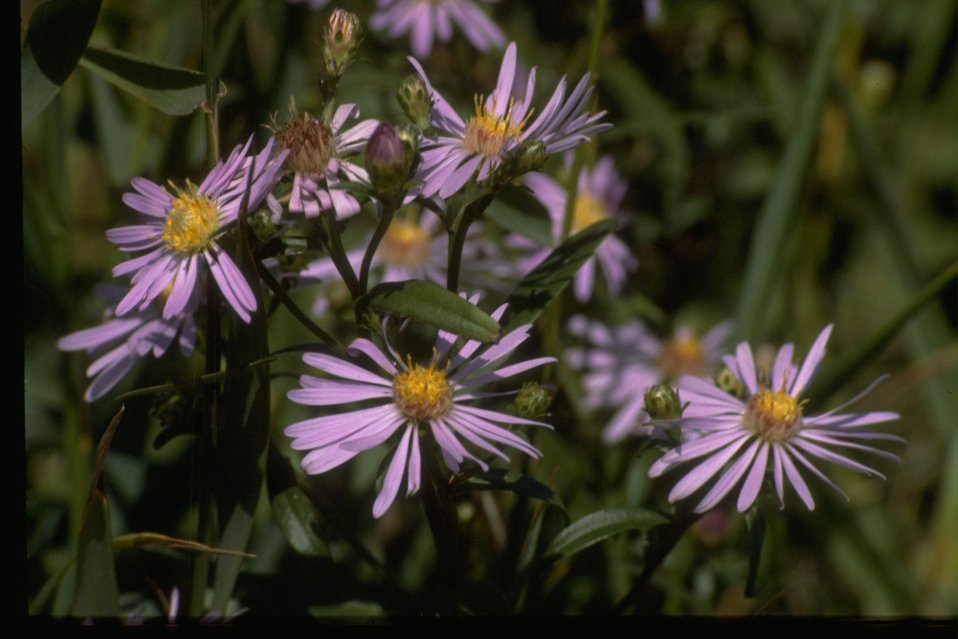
Common California Aster.